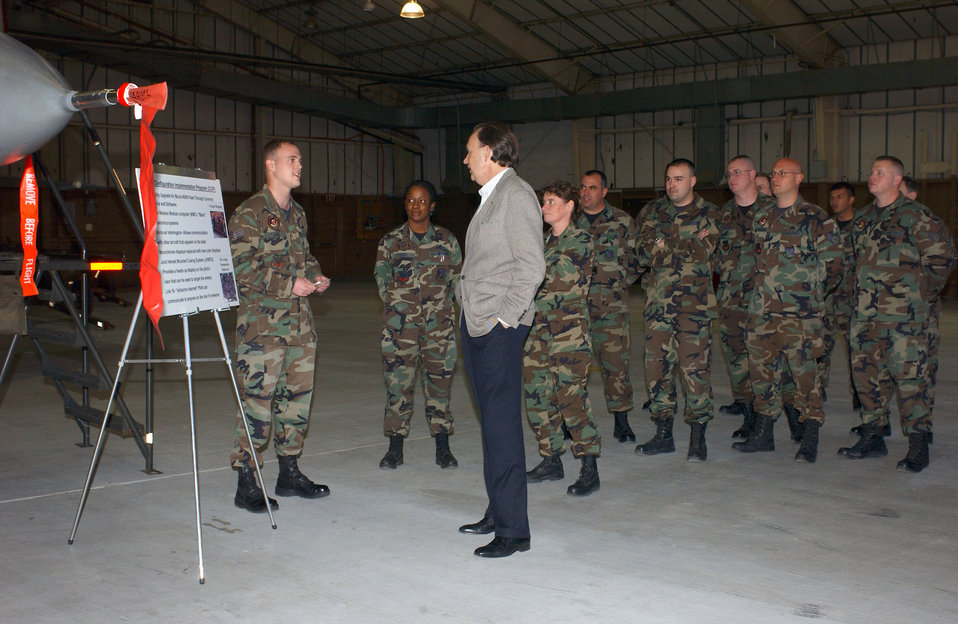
Leadership visit

CANNON AIR FORCE BASE, N.M. (AFPN) -- Senior Airman Ross Steen briefs Assistant Secretary of the Air Force William C.